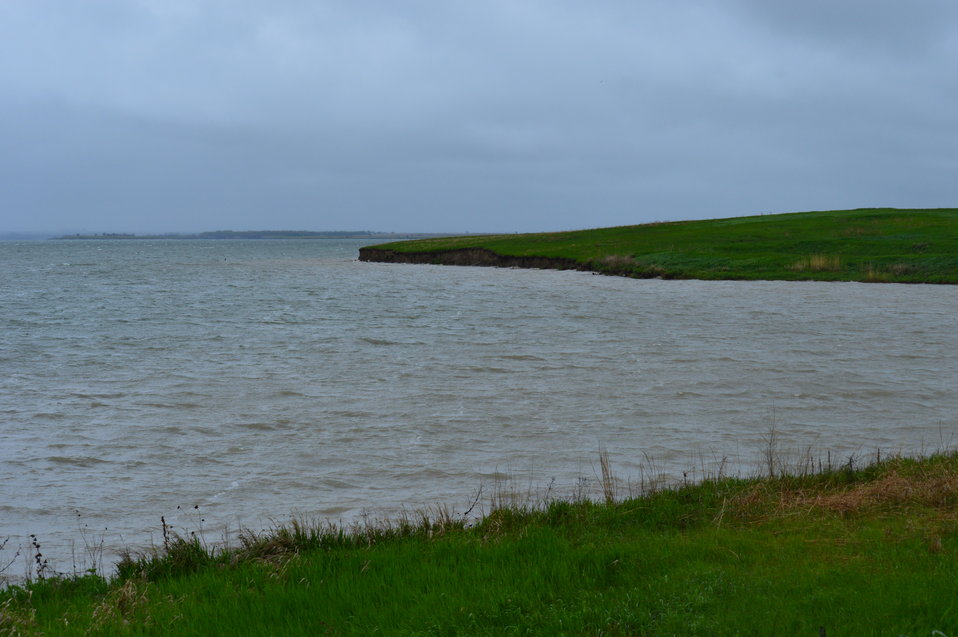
Audubon Lake

Scenery and wildlife and Audubon National Wildlife Refuge in North Dakota.